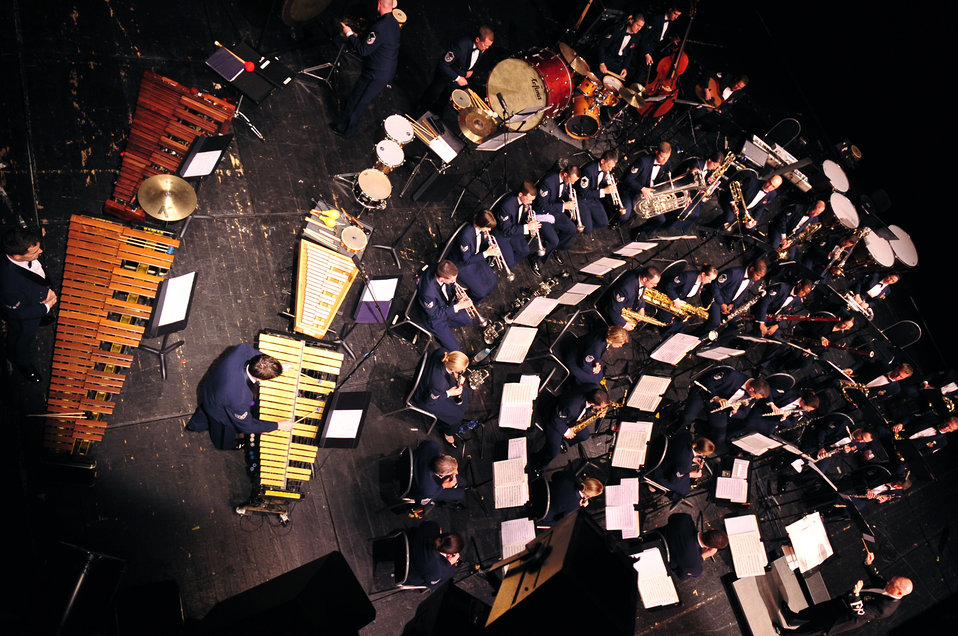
USAFE Concert Band on tour

The United States Air Forces in Europe Band performs during a concert May 8, 2011, in Nitra, Slovakia. The USAFE concert band is on tour through three countries, performing at seven locations as part of a building partnerships capacity and community outreach initiative.